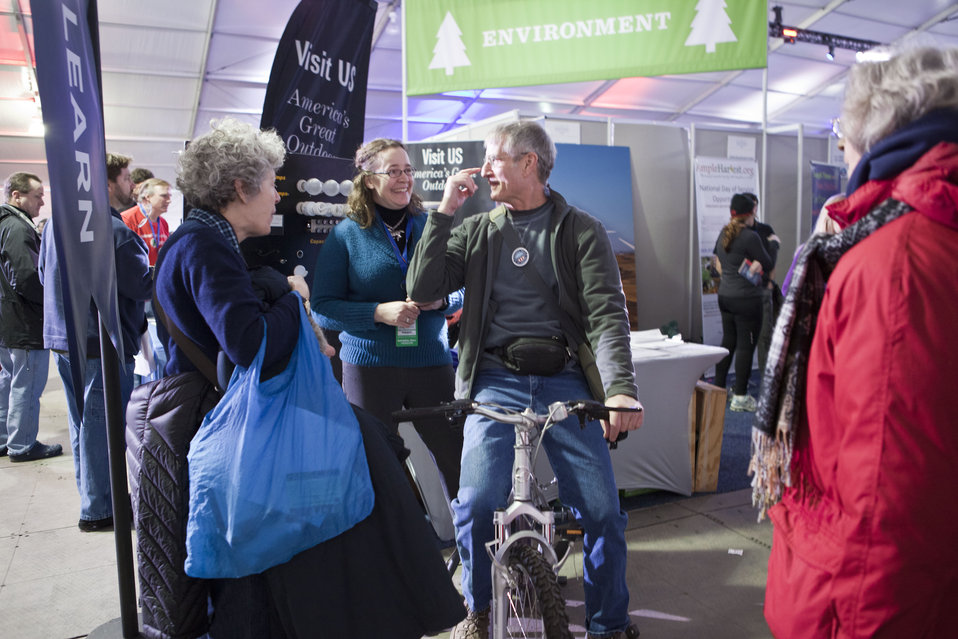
What's your #energypledge?